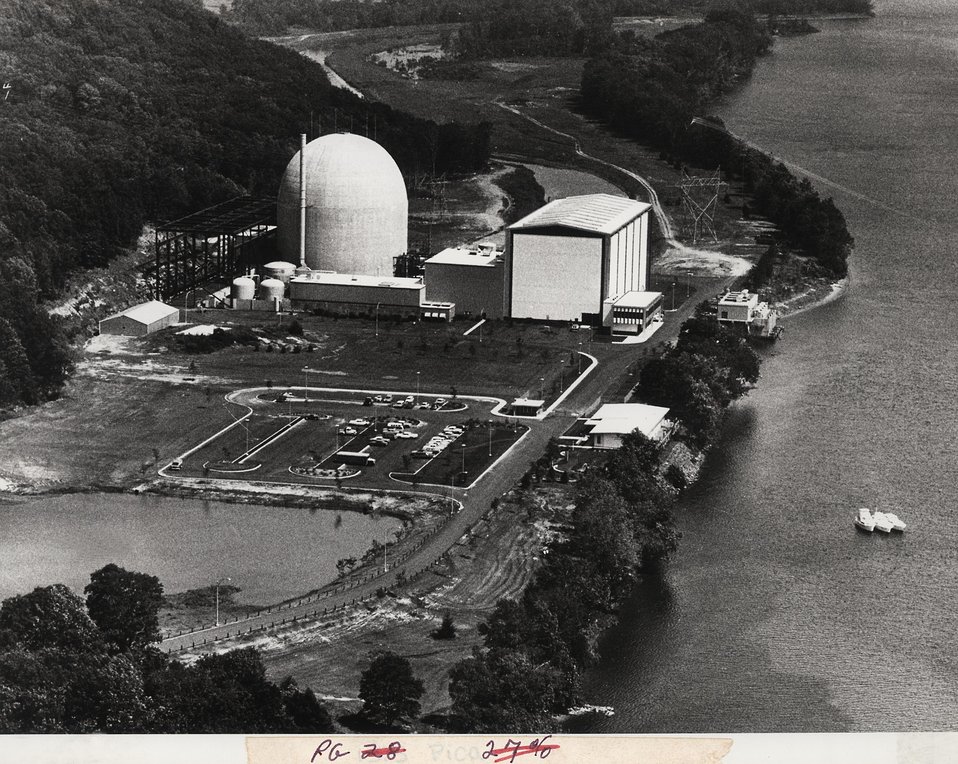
Haddam Neck.